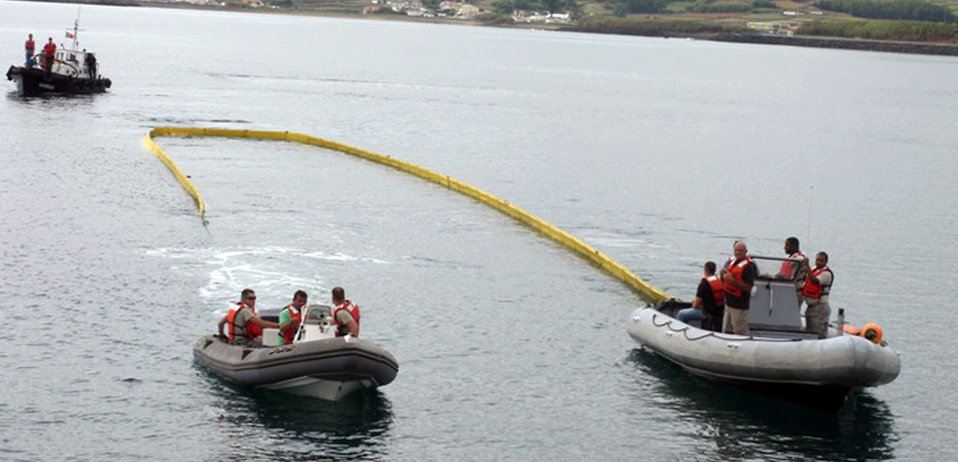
Lajes oil spill training

Airmen and Portuguese officials deploy to the Priaia beach with a boom attached to two boats to contain an oil spil during a joint fuel spill response training exercise Sept. 28, 2010, at Lajes Field, Azores. The joint exercise brought together more than 40 U.S. and host nation emergency response team members in a classroom-discussion setting and hands-on scenarios